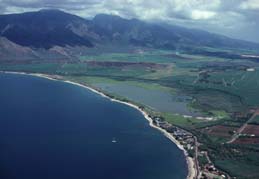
Kealia Pond NWR

The 200-acre open water pond is seasonal; flooding to 450 acres in winter months (December-March) and extending into the adjacent mudflats to low water conditions (30% water coverage) in late summer/fall (August-November). This 691-acre wetland, with shallow mudflat areas interspersed with vegetation, provides suitable nesting, feeding, and resting habitat for endangered waterbirds.